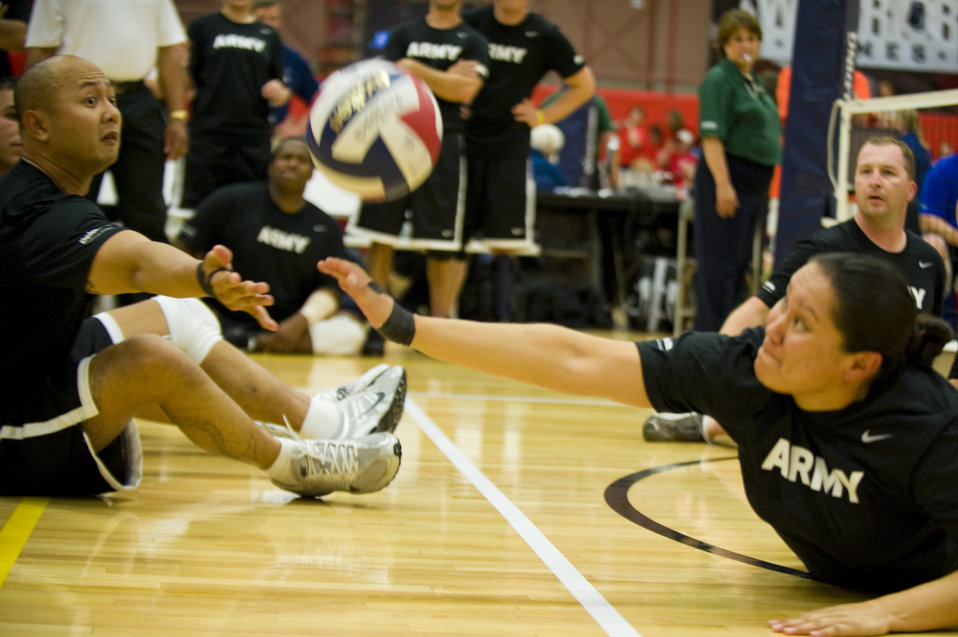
Army marches through Air Force

Members of the Army sitting volleyball team reach for the volleyball after being served by the Air Force May 19, 2011, during the the second annual Warrior Games in Colorado Springs, Colo. The Army won the series with two straight games.